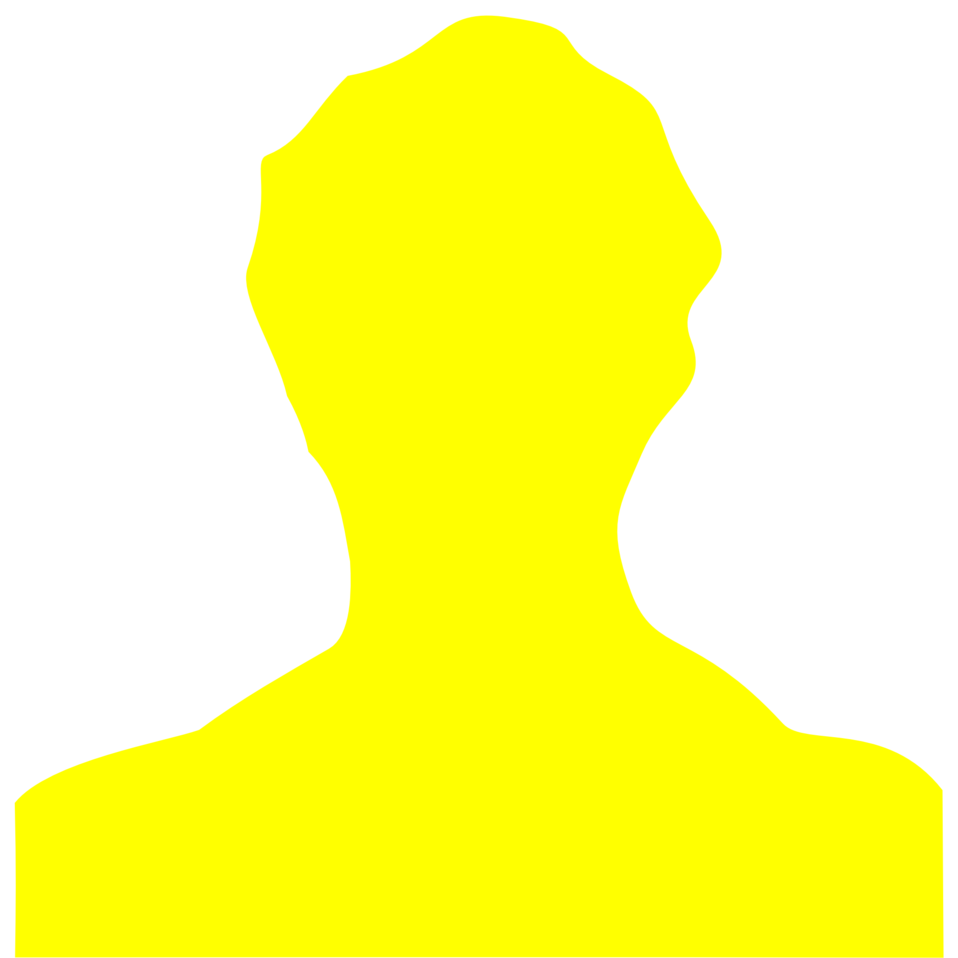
Placeholder image male (yellow)